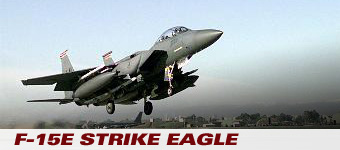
F-15E Strike Eagle flew in St. Louis, Mo., on Dec. 11,1986. .